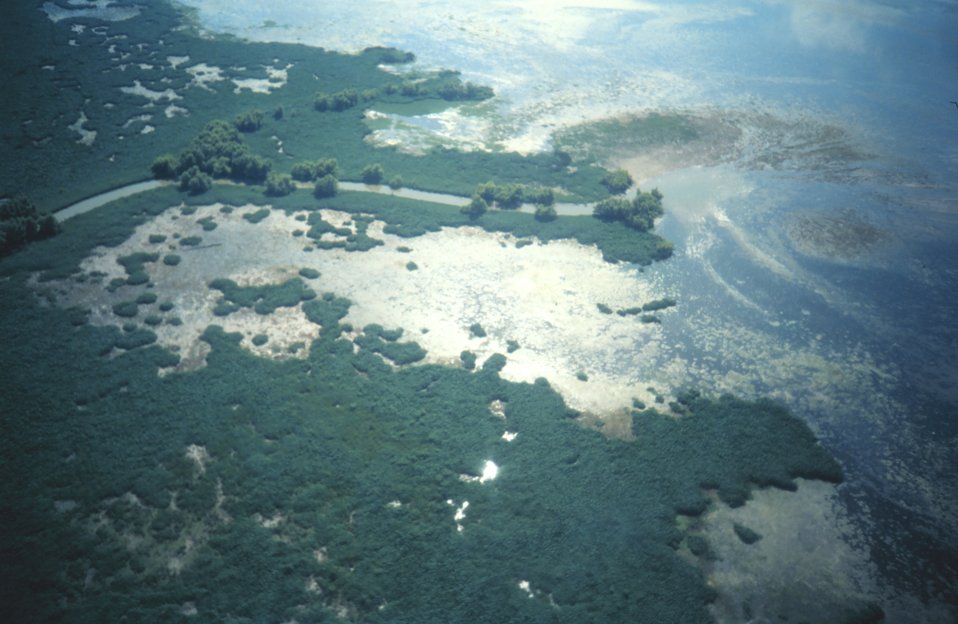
Aerial view of interior Mississippi Delta marshes